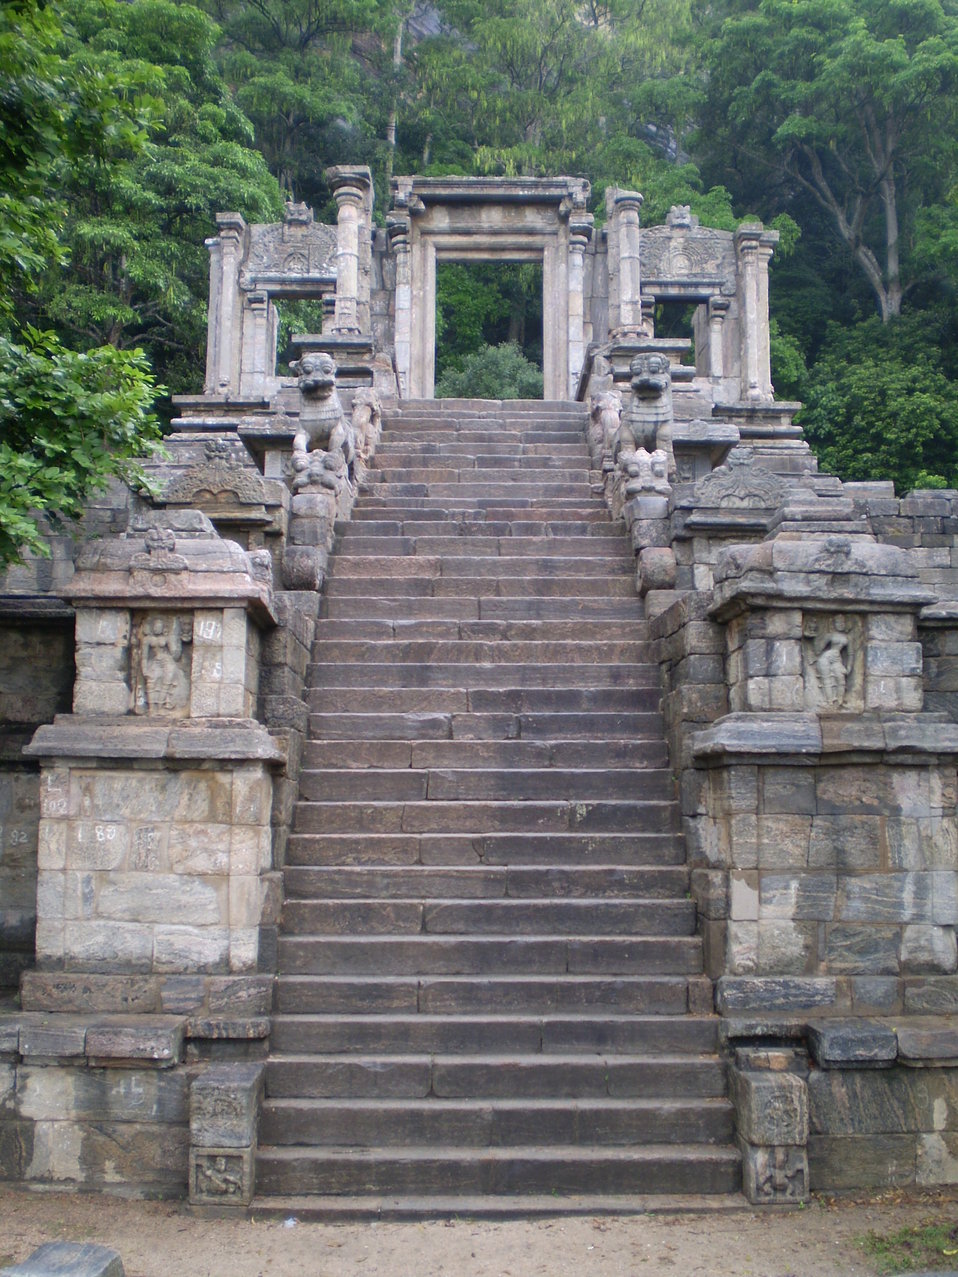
A view of the Buddhist Yapahuwa rock fortress complex Staircase in Sri Lanka. This fortress was the site of the Kingdom of Dambadeniya located here at Yapahuwa.